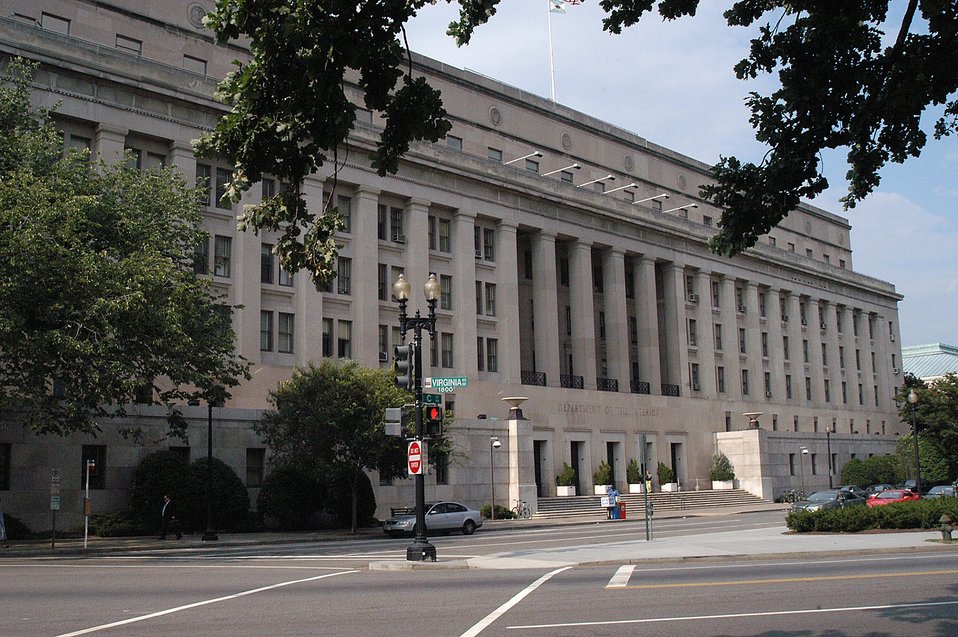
Department of the Interior building in Washington DC on 1849 C Street N.W. Photo by Tom Iraci, July 2004.